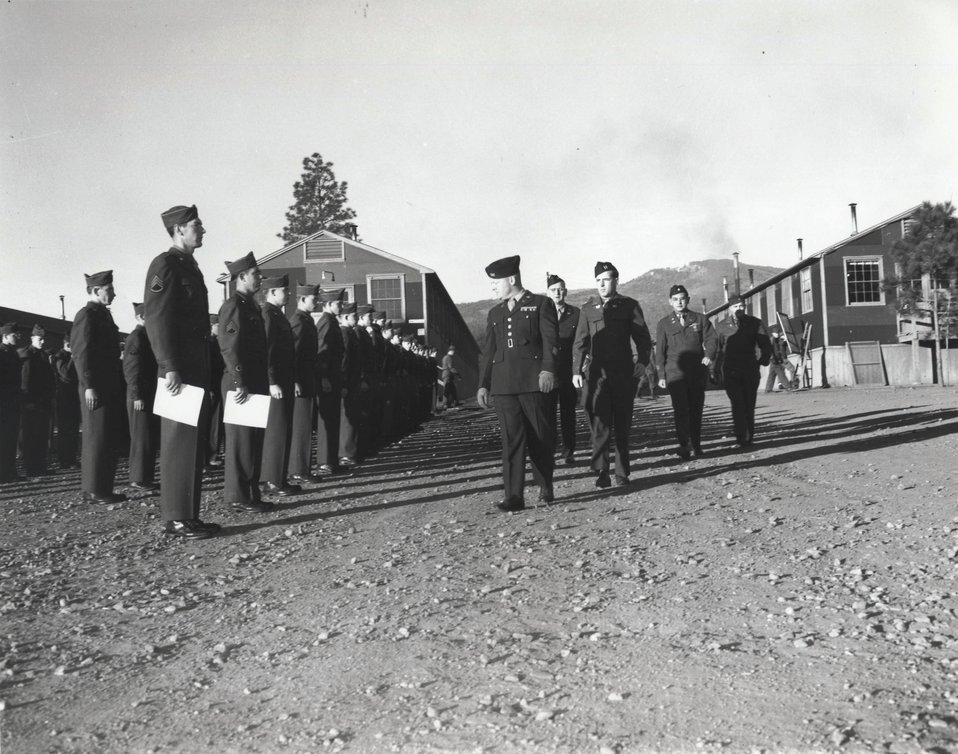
SED REVIEW